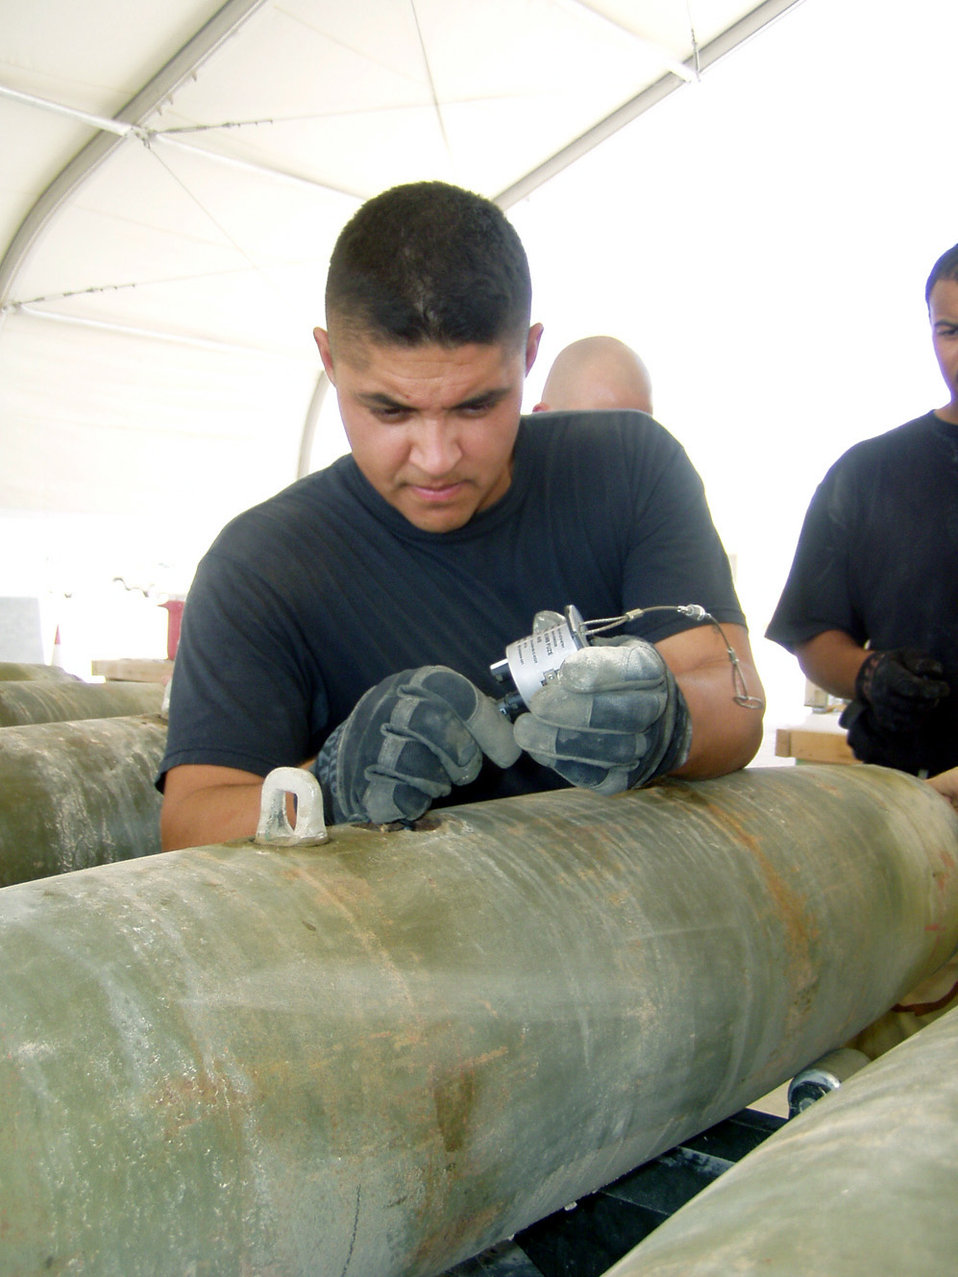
Getting smart

SOUTHWEST ASIA -- Senior Airman Alexander Murillo inserts a fuse initiator into an MK-82 bomb. The initiator provides power to the fuse during the bombs fall. This bomb is being fitted with a tail kit, turning it into a